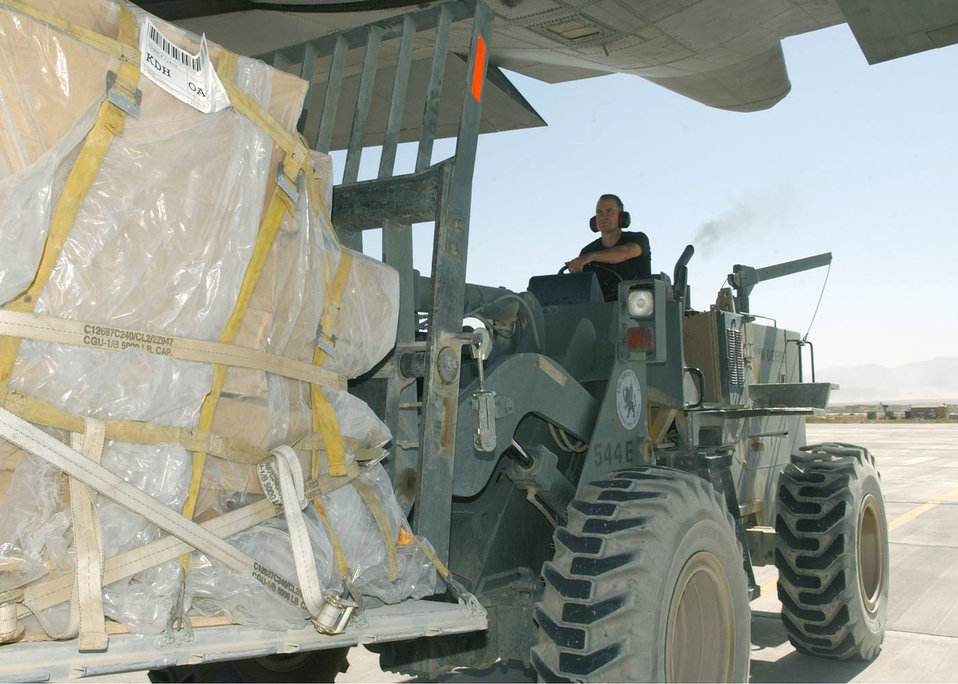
ATOC keeps troops, supplies moving

BAGRAM AIR BASE, Afghanistan -- Staff Sgt. Tim Wolberg unloads a pallet of supplies off a 517th Airlift Squadron C-130 Hercules from Elmendorf Air Force Base, Alaska. He is an air transport technician with the 455th Expeditionary Logistics Readiness Squadron's air terminal operations center here and deployed from Pope AFB, N.C.